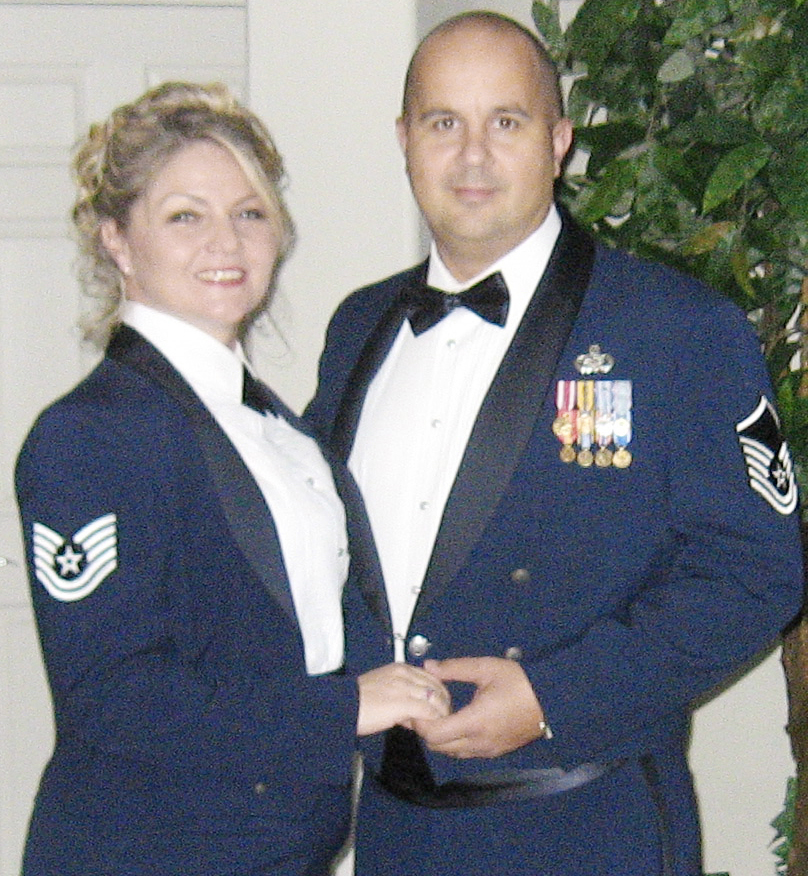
Air Force military family of the year visits Washington

Tech. Sgt. Thane Ojala and Master Sgt. Ojala were selected as the National Military Family Association's 2009 Air Force Family of the Year. The Ojala family from Nellis Air Force Base, Nev., traveled to Washington, D.C., Oct. 26, 2009, to attend the awards ceremony.